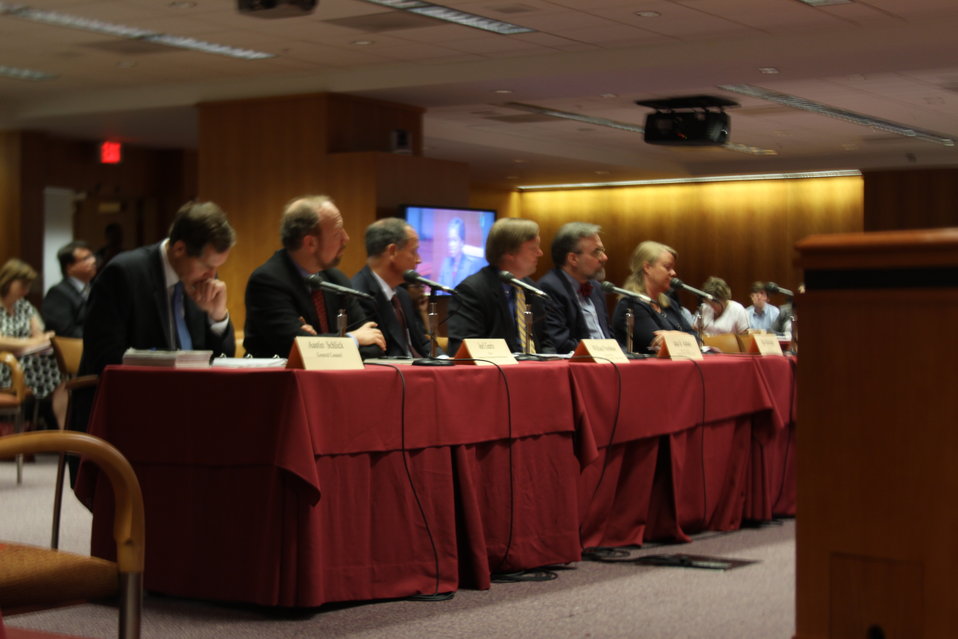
7/12/2011 Open Commission Meeting

The Consumer and Governmental Affairs Bureau's remarks regarding Billing for Unauthorized Charges ('Cramming') at the July 2011 Open Commission Meeting